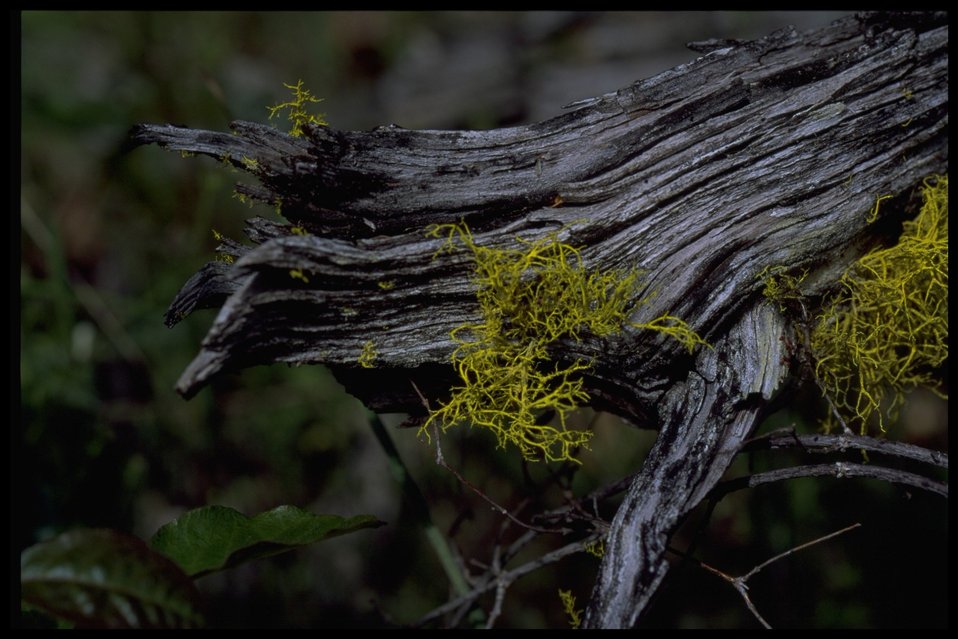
Lichen Latheria vulpina.